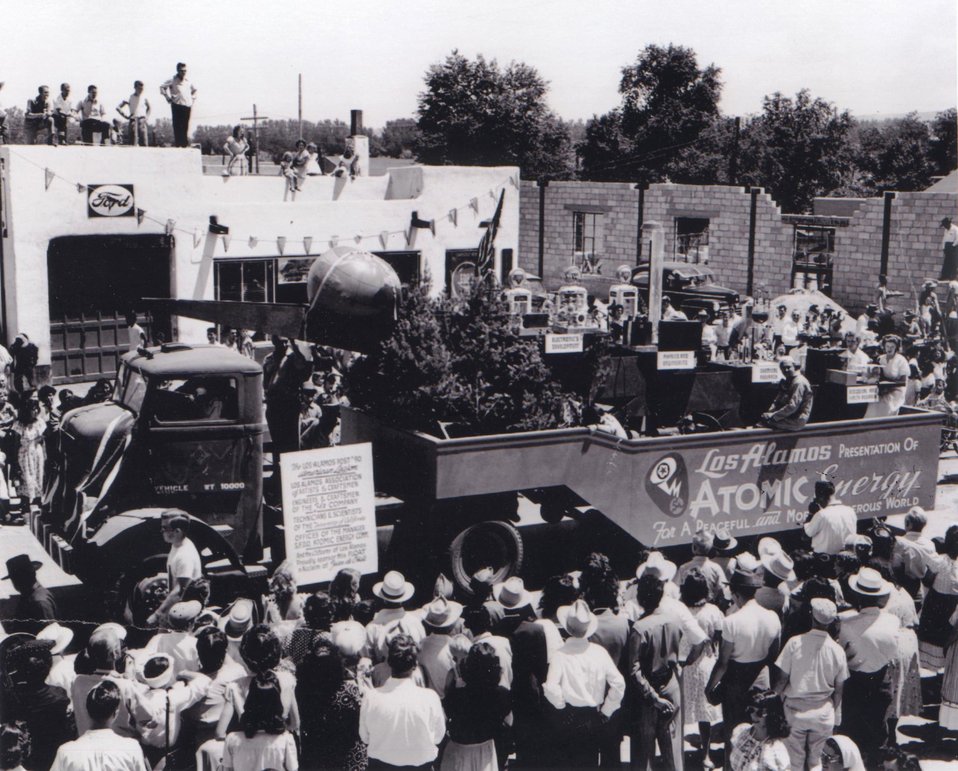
PARADE